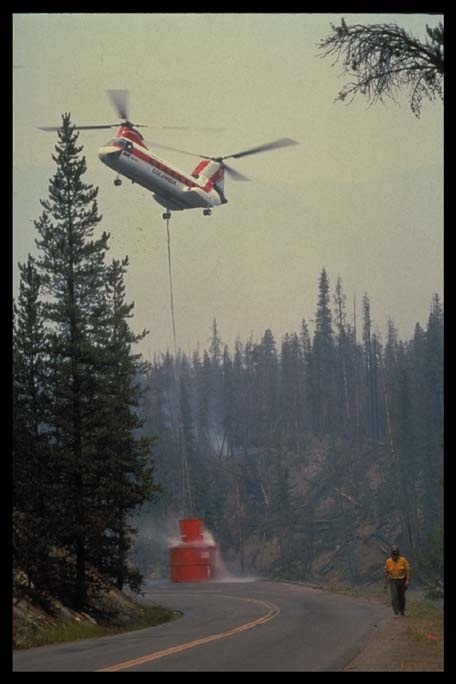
Helicopter with bucket